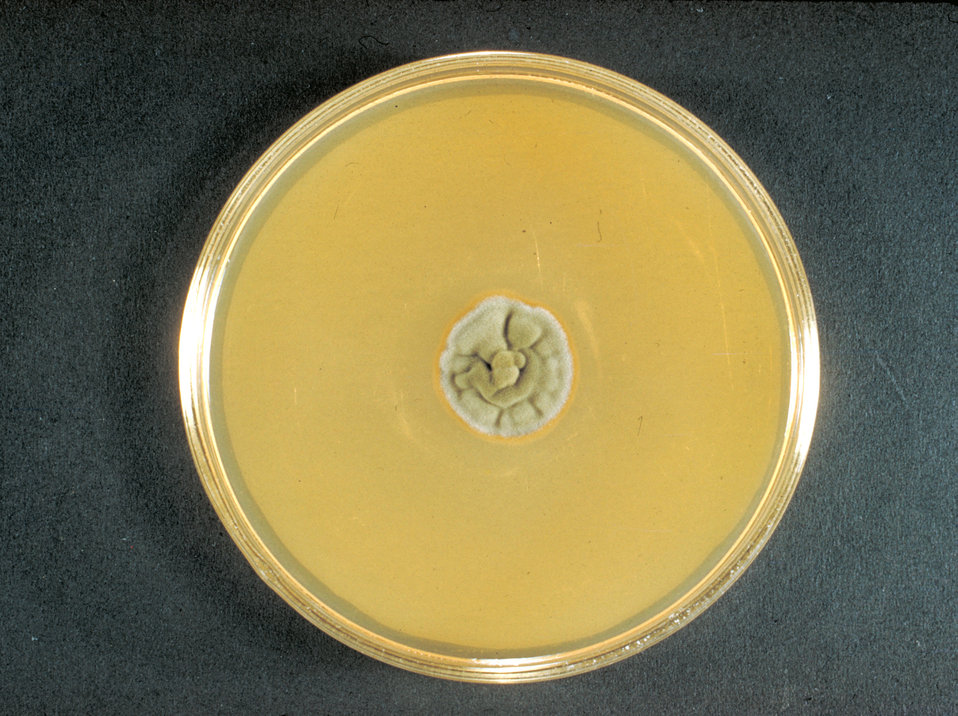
Shown here is a plate culture of Hortaea werneckii, formerly Cladosporium werneckii, at four weeks growth.